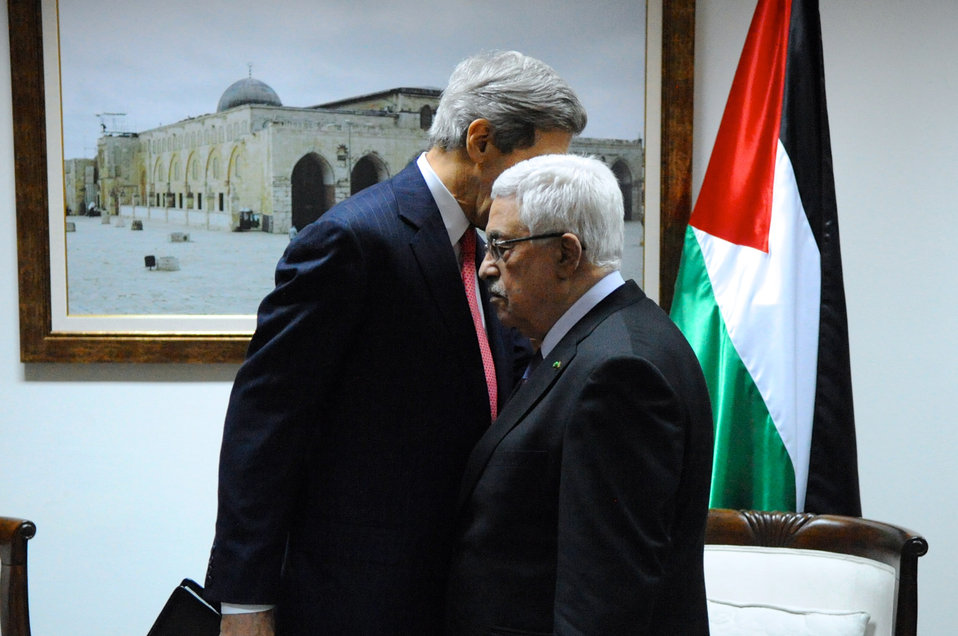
Secretary Kerry Chats With Palestinian Authority President Abbas

U.S. Secretary of State John Kerry has a private chat with Palestinian Authority President Mahmoud Abbas before a meeting in Ramallah, West Bank, on December 12, 2013.